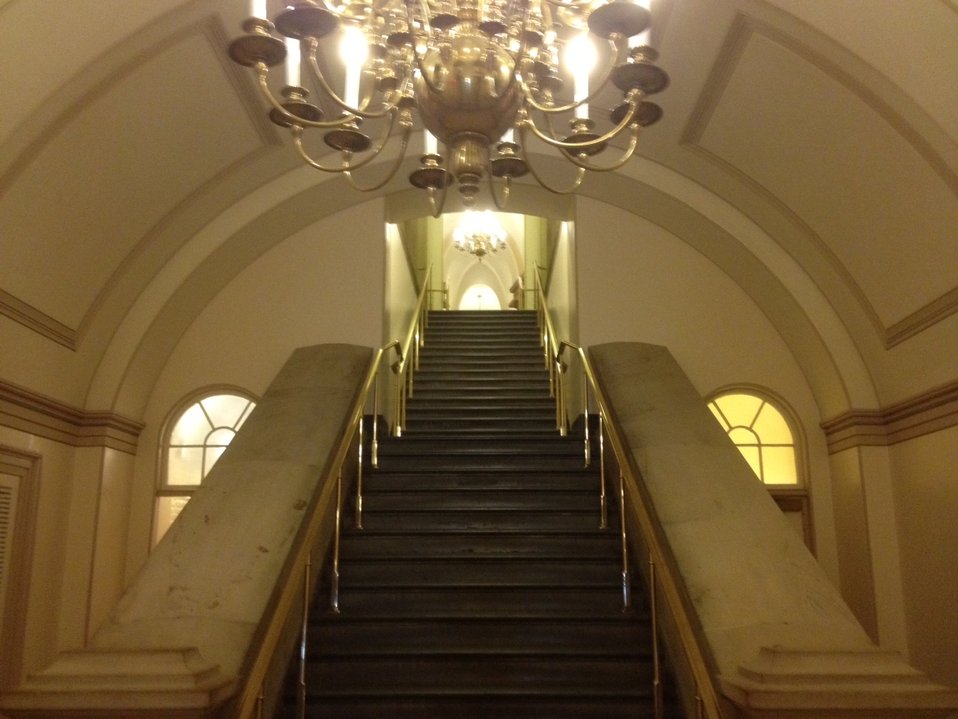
Capitol Subbasement Today

During Civil War this space was used as a bakery. Drawing of its use during 1861: www.flickr.com/photos/uscapitol/7846242766/